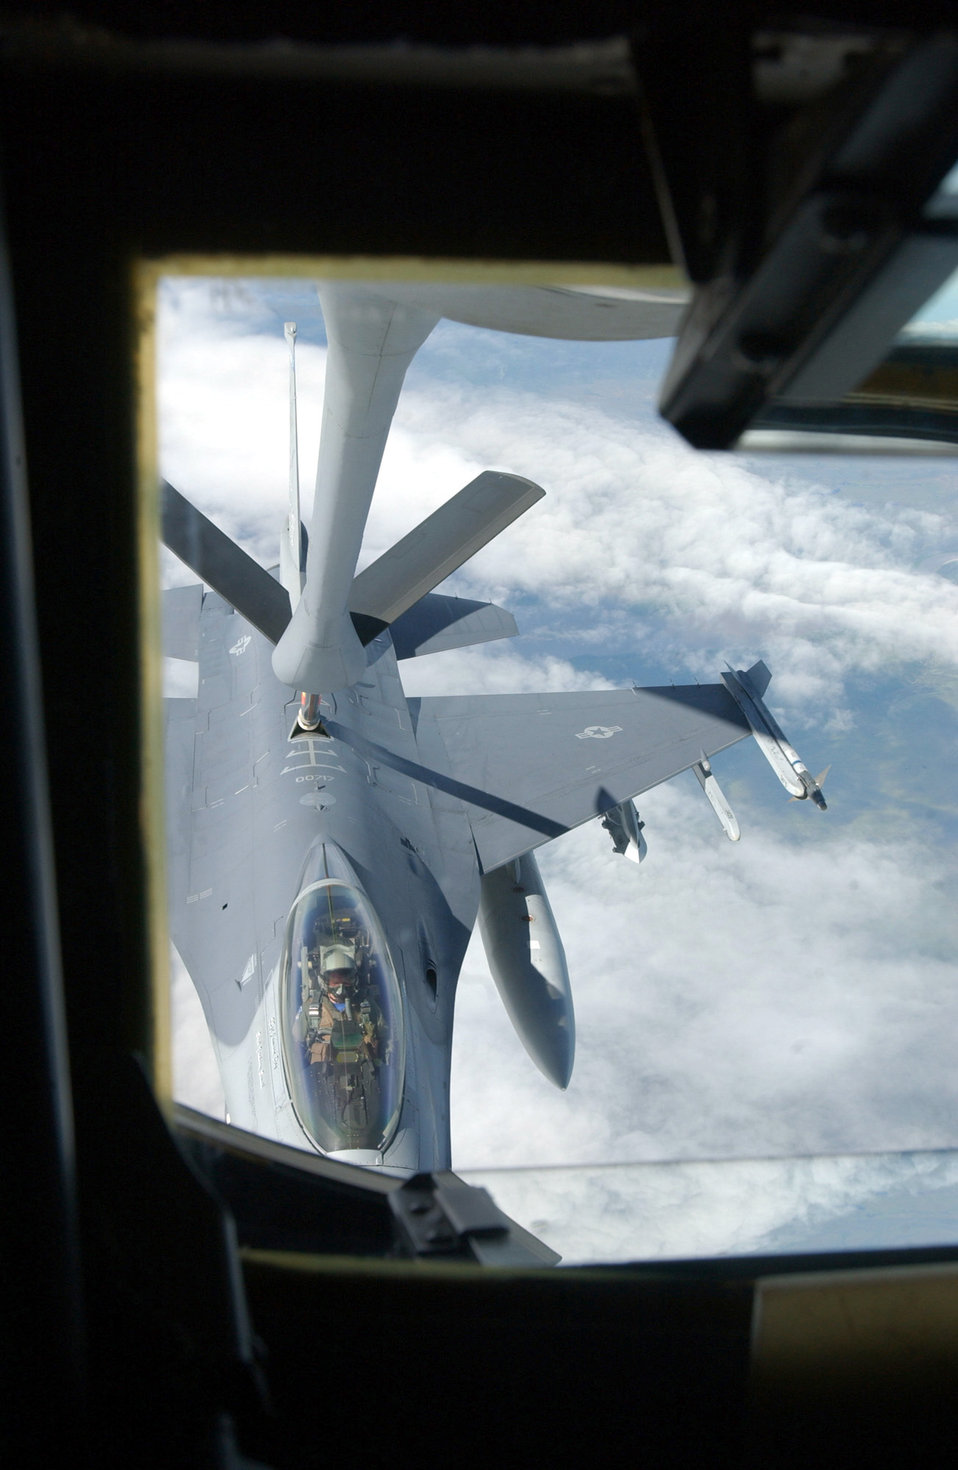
Gas pump in the sky

OVER ALASKA -- An F-16 Fighting Falcon from the 18th Fighter Squadron at Eielson Air Force Base, Alaska, receives fuel from a KC-135 Stratotanker from the Air National Guard's 126th Air Refueling Wing at Scott AFB, Ill., June 11 during Northern Edge '04. The exercise is Alaska Command's joint training exercise designed to enhance interoperability among the services.